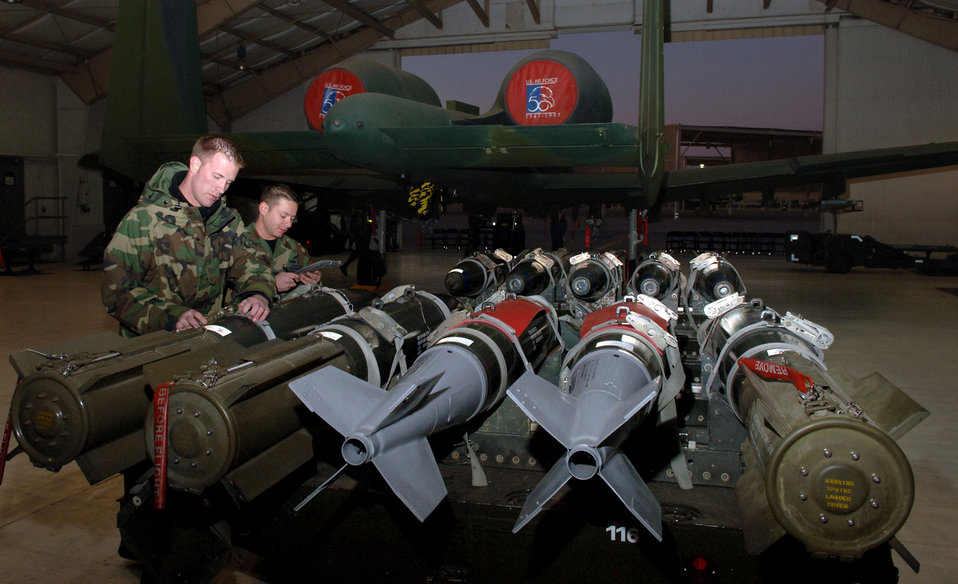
Load Crew

DAVIS-MONTHAN AIR FORCE BASE, Ariz. (AFPN) -- Senior Airman Thomas Dougherty (foreground) and Staff Sgt. Luis Heredia go over their checklists to ensure bombs are serviceable before loading them onto the awaiting A-10 Thunderbolt during a load crew competition. Both Airmen are assigned to the 355th Aircraft Maintenance Squadron. The 355th AMXS is comprised of the 354th, 357th and 358th Aircraft Maintenance Units. The 357th AMU placed first and completed the load in 38 minutes and 44 seconds.